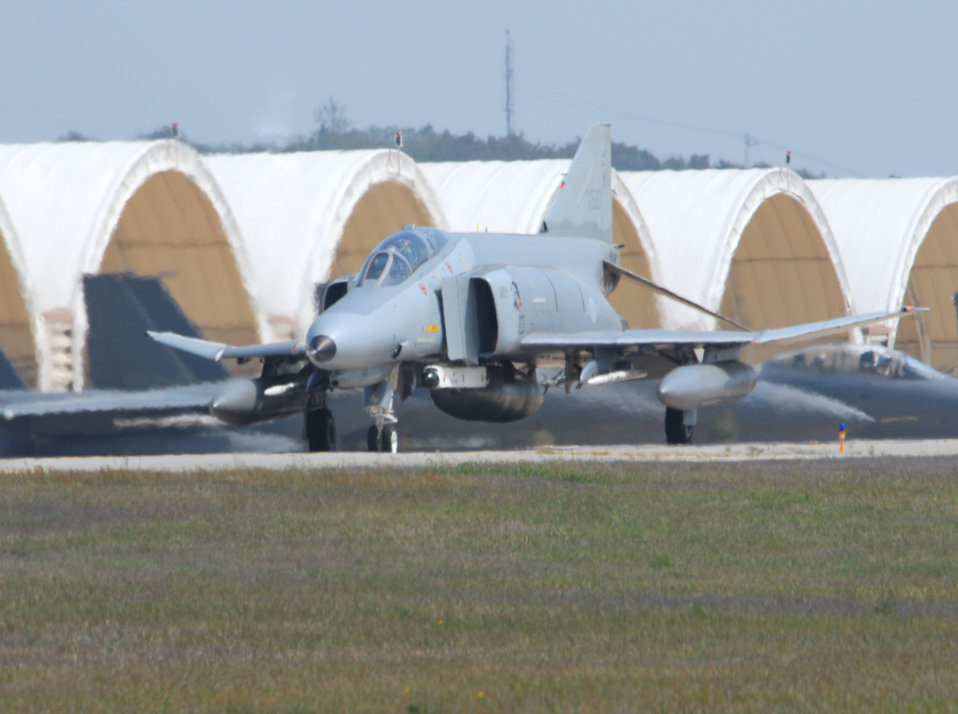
Max Thunder 09-01

A Republic of Korea Air Force F-4E Phantom taxis to the runway at Kunsan Air Base, Republic of Korea, for a mission May 11 during exercise Max Thunder 09-01. The exercise is a 7th Air Force-designed, bilateral training opportunity that aims to test aircrews' warfighting skills in realistic combat situations that combine both ROKAF and U.S. Air Force flying and maintenance personnel.